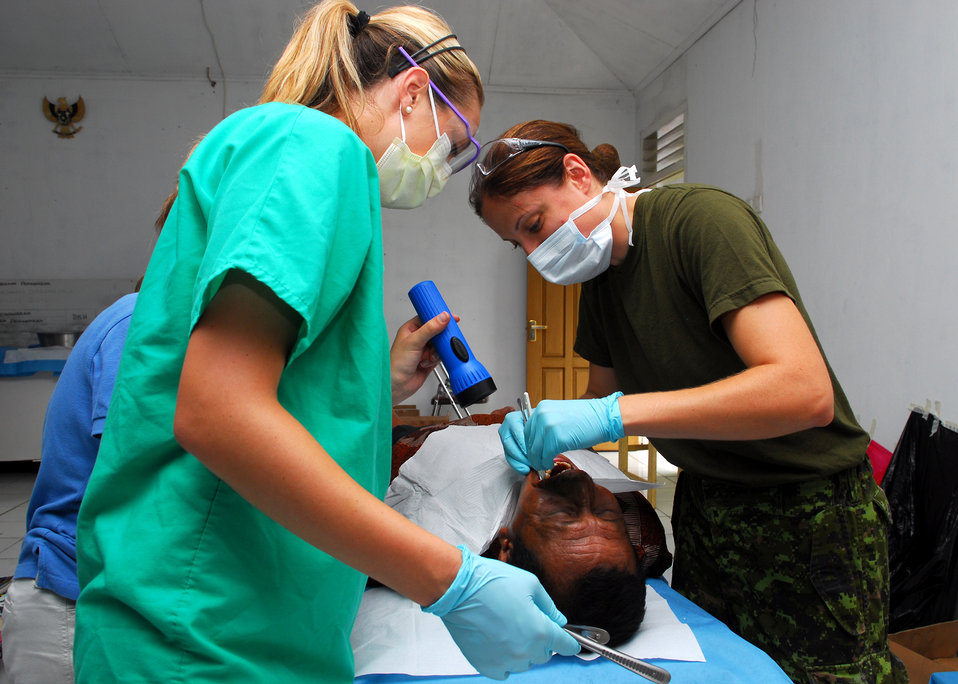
Canadian Forces Army Capt. (Dr.) Isabelle Plasse Extracts a Tooth as Lacey Andrews Shines a Light on the Patient’s Mouth

Canadian Forces Army Capt. (Dr.) Isabelle Plasse extracts a tooth as Lacey Andrews, a member from Latter-day Saint Charities, shines a light on the patient’s mouth during a dental civic action program in Tidore, Indonesia, on July 20, 2010. Mercy is in the North Maluku Islands conducting Pacific Partnership 2010, the fifth in a series of annual U.S. Pacific Fleet endeavors conducted in Indonesia as a disaster relief exercise aimed at strengthening regional partnerships.